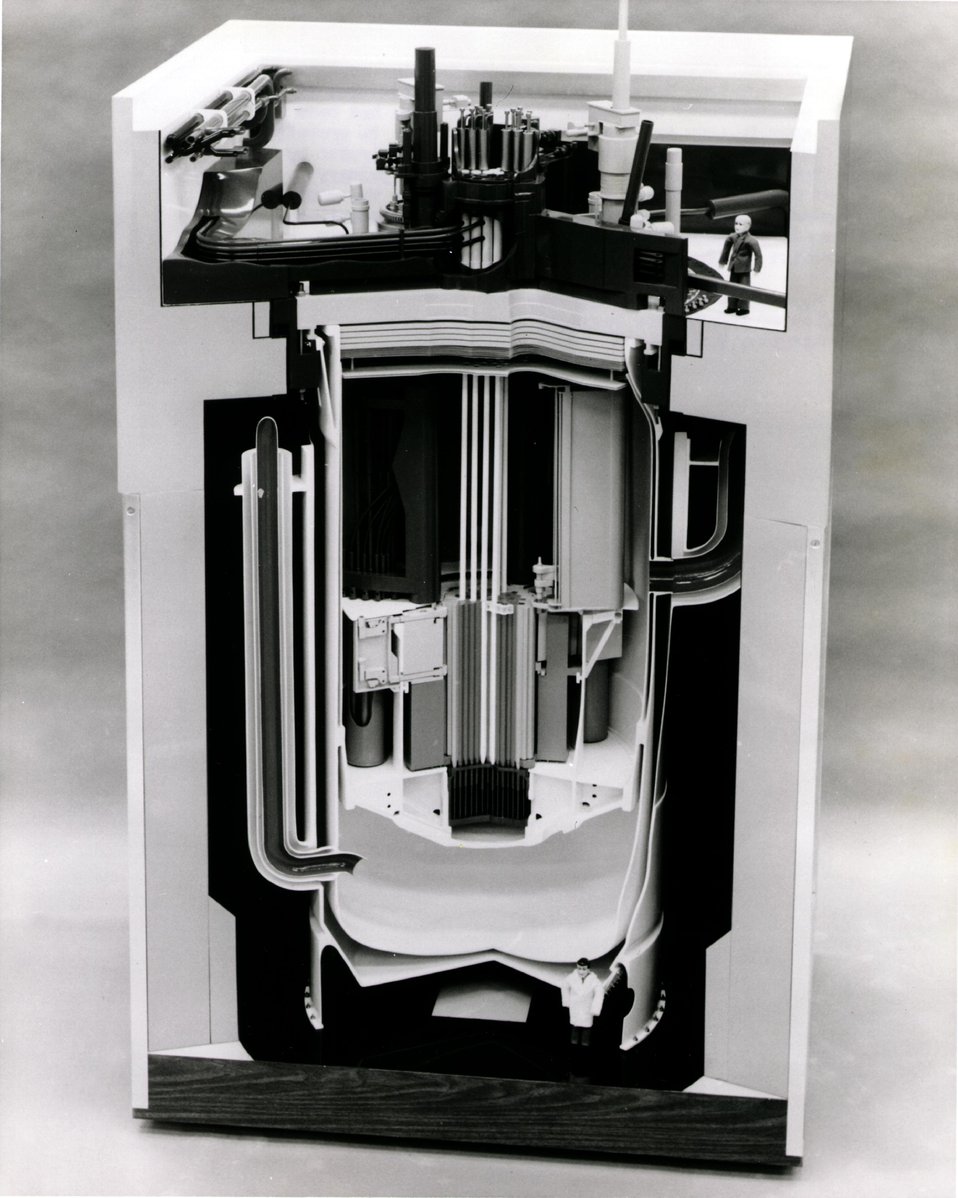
A replica of the reactor vessel of the Fast Flux Test Facility, under construction at the Atomic Energy Commission's Hanford Site, has been cut away to show instrumentation within it. The Fast Flux Test Facility is in support of the AEC's Liquid Metal Fast Breeder Reactor program. c. 1972.